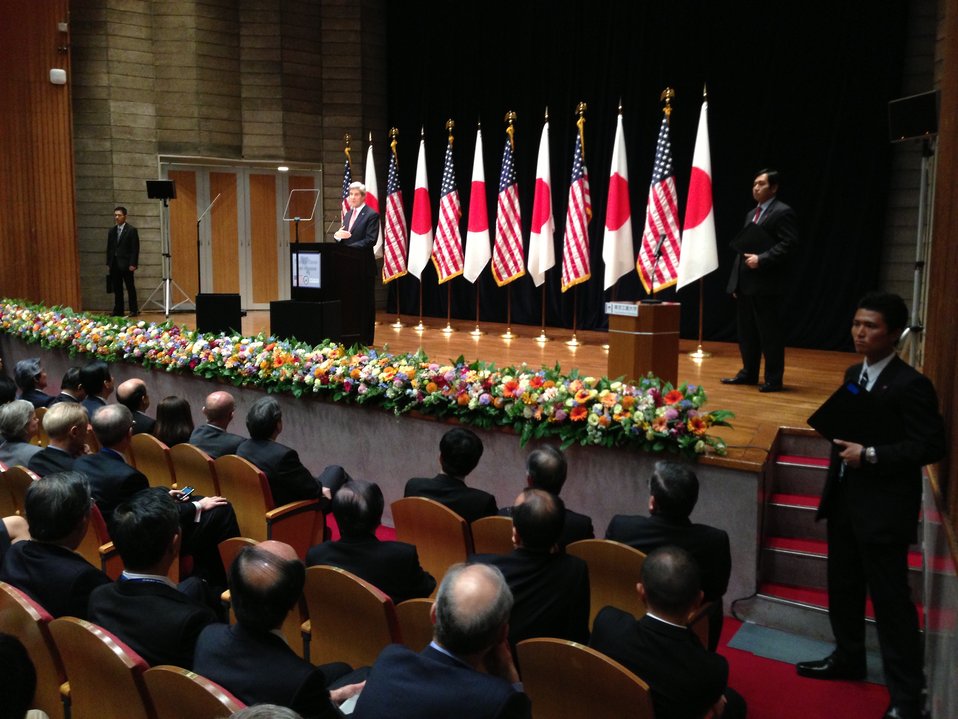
Secretary Kerry Speaks at the Tokyo Institute of Technology

U.S.Secretary of State John Kerry speaks about the U.S. relationship with the Pacific region at the Tokyo Institute of Technology in Tokyo, Japan, on April 15, 2013.